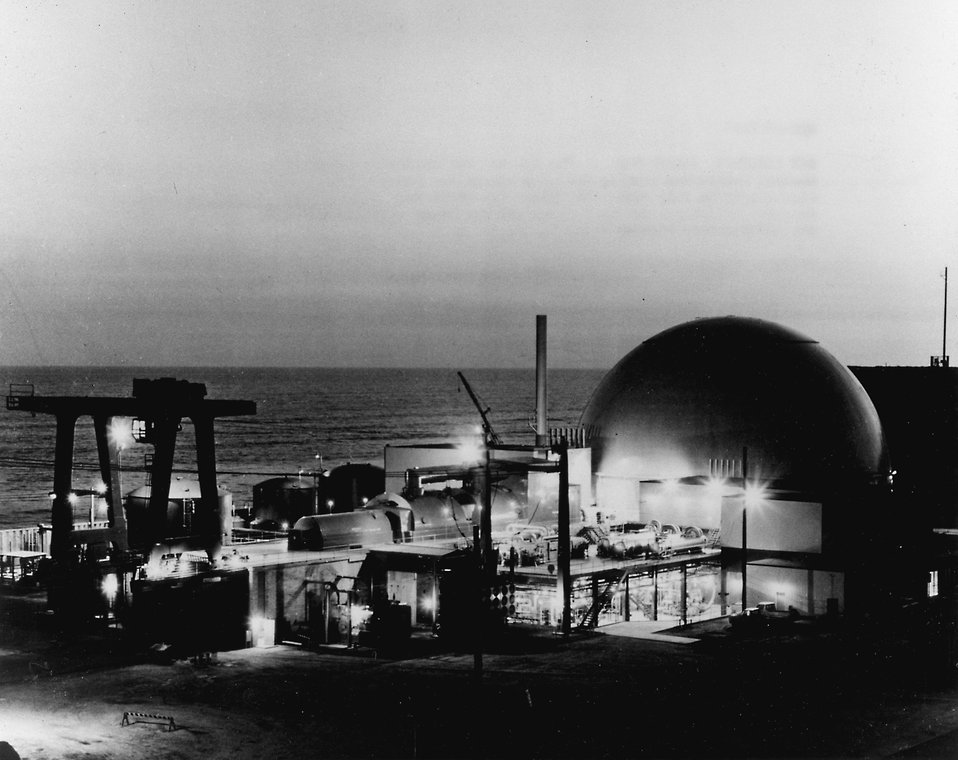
The 430 Mwe San Onofre Nuclear Generating Station Unit 1 produced its first electricity in July 1967. Circa 1968.